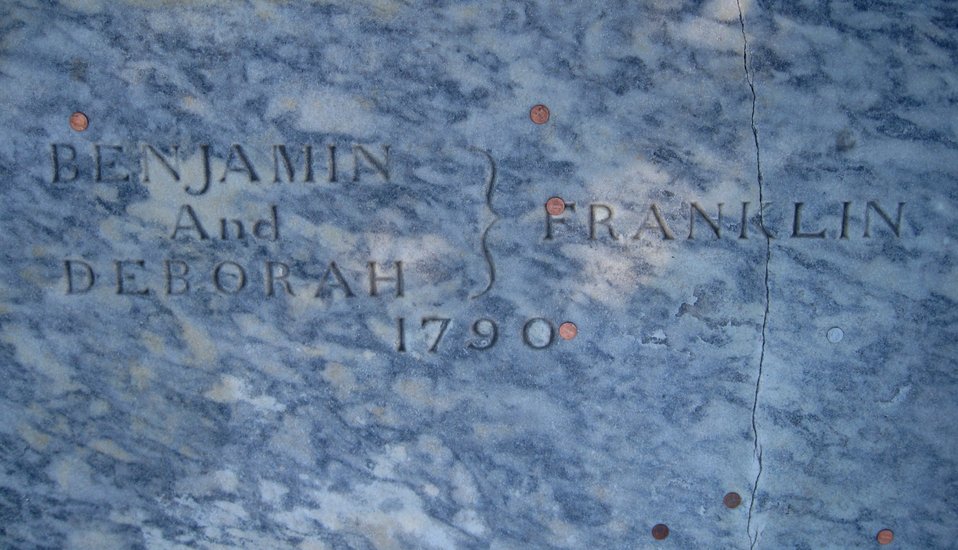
Chronology of Benjamin Franklin at cemetery at Independence National Historic Park.